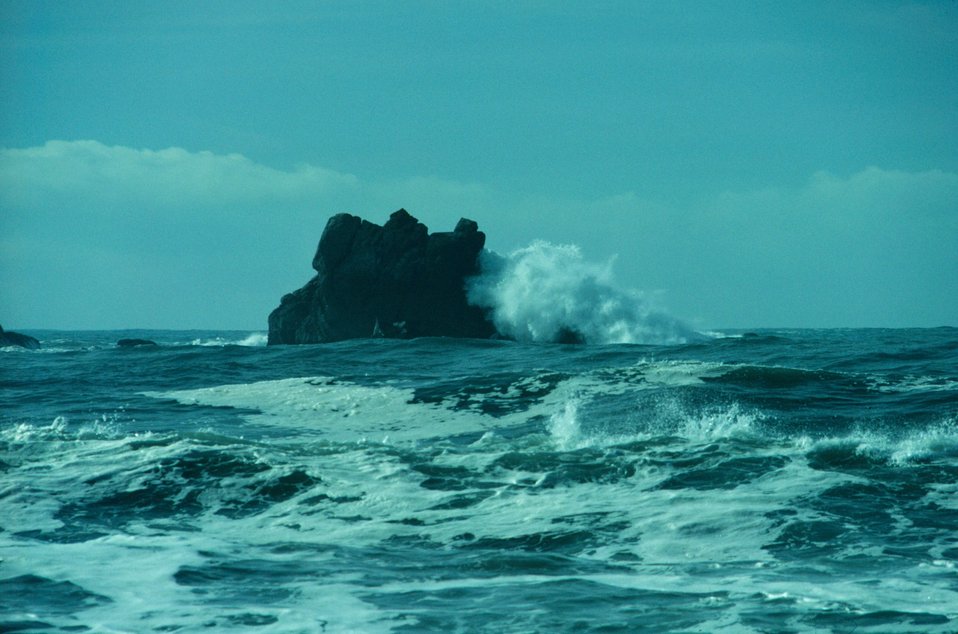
Probably northern California or southern Oregon